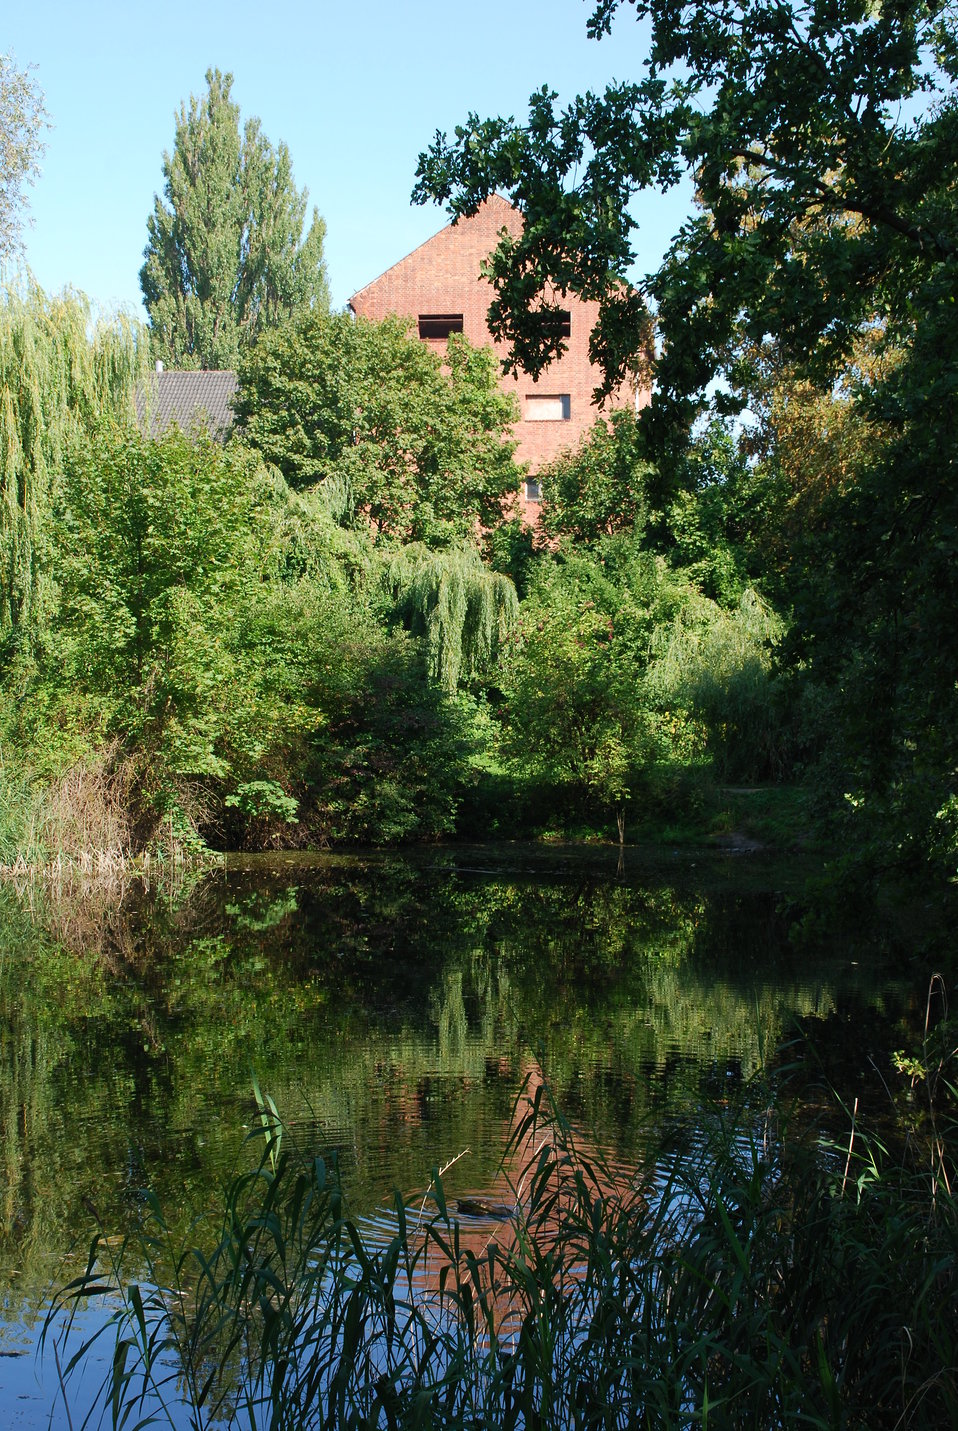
Theaterteich in Frankfurt (Oder), am ehemaligen Kleist-Theater, Friedrich-Ebert-Straße